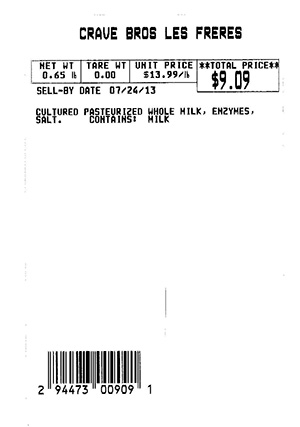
RECALLED – Cheese

July 5, 2013 – Product Recall – Whole Foods Market recalls cheese because of possible health risk.